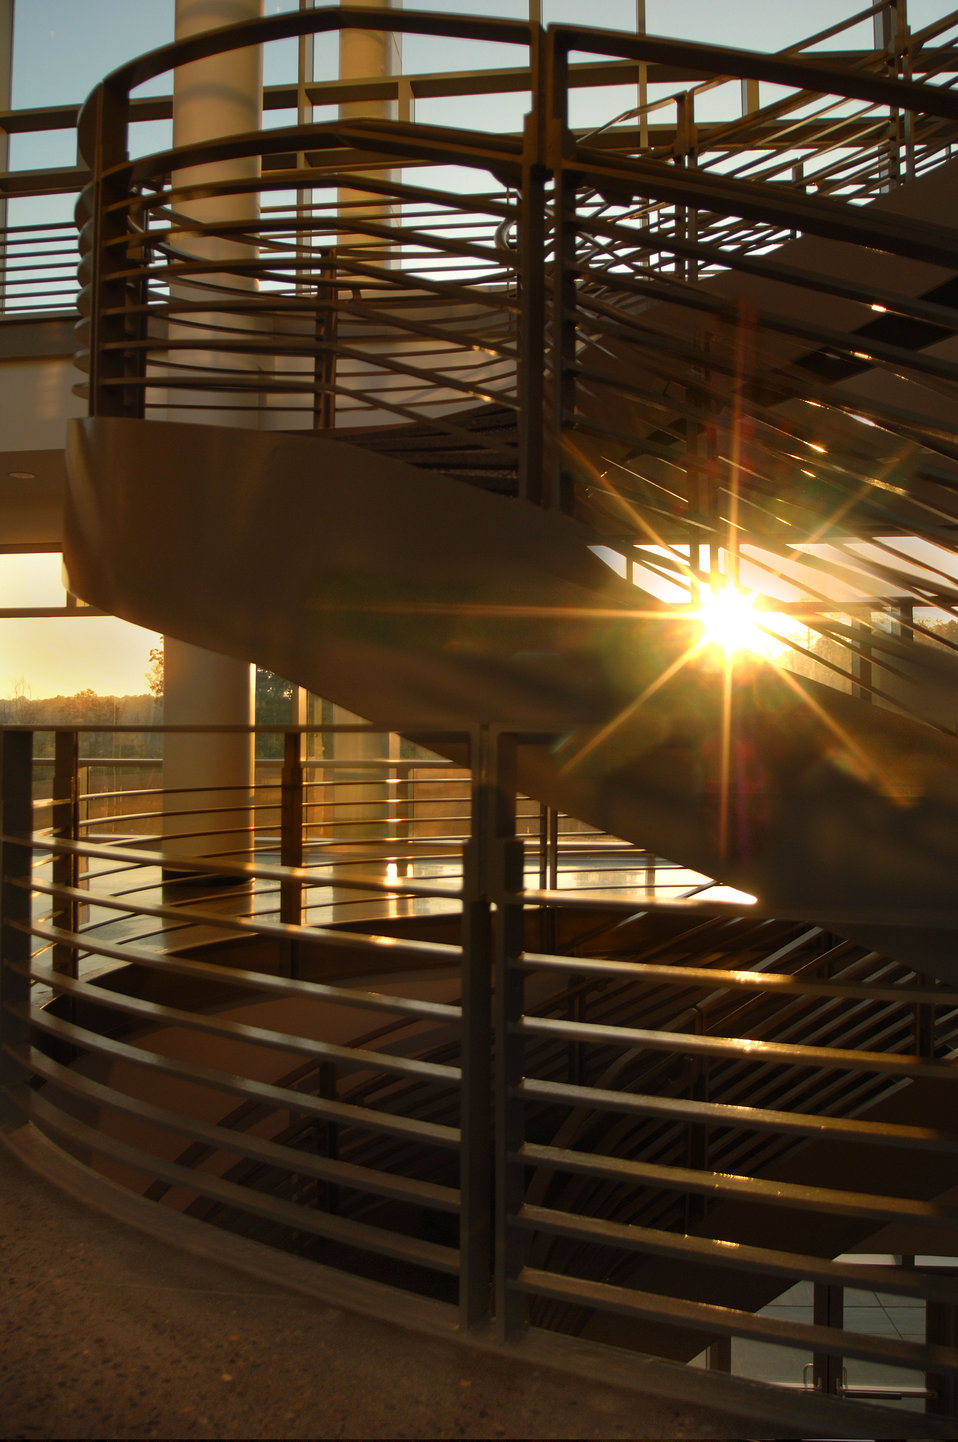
Interior of Spallation Neutron Source

05-277-14 DOE photo by Lynn Freeny

Oak Ridge National Lab Oak Ridge Tennessee
10-5-2005